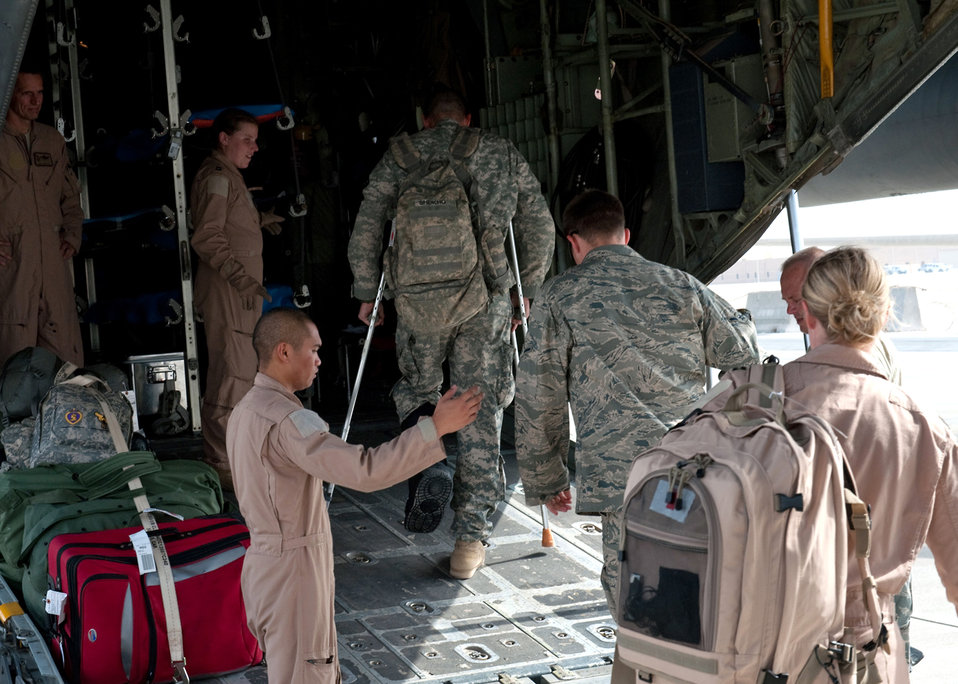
Airmen provide comfort, care with aeromedical evacuations

Airmen from the 379th Expeditionary Aeromedical Evacuation Squadron help load medical patients onto a C-130 Hercules for transportation Aug. 15, 2009, at an air base in Southwest Asia. Members of the 379 EAES transport patients from throughout Southwest Asia to established medical care facilities.